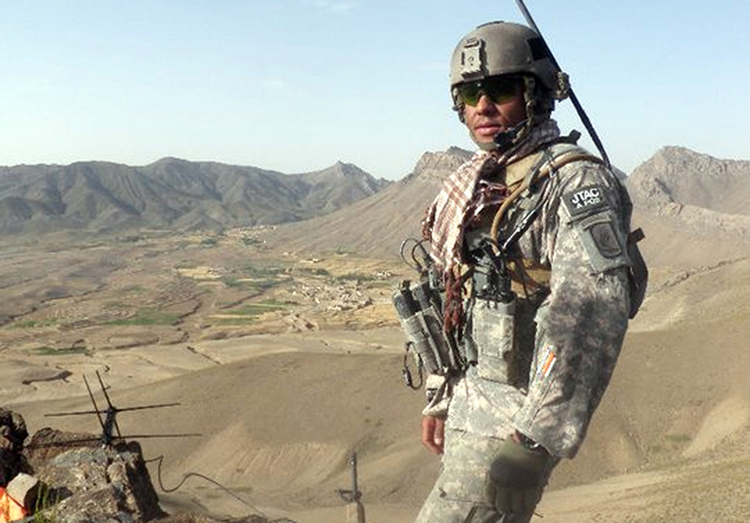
JTAC receives award

Tech. Sgt. Peter Davey Jr. was deployed to Afghanistan, with an Army unit, in support of Operation Enduring Freedom, from June to December 2010. Sergeant Davey is an 8th Air Support Operations Squadron joint terminal attack controller. He recently received the Department of Defense African American History Month Recognition Award for the Air Force.